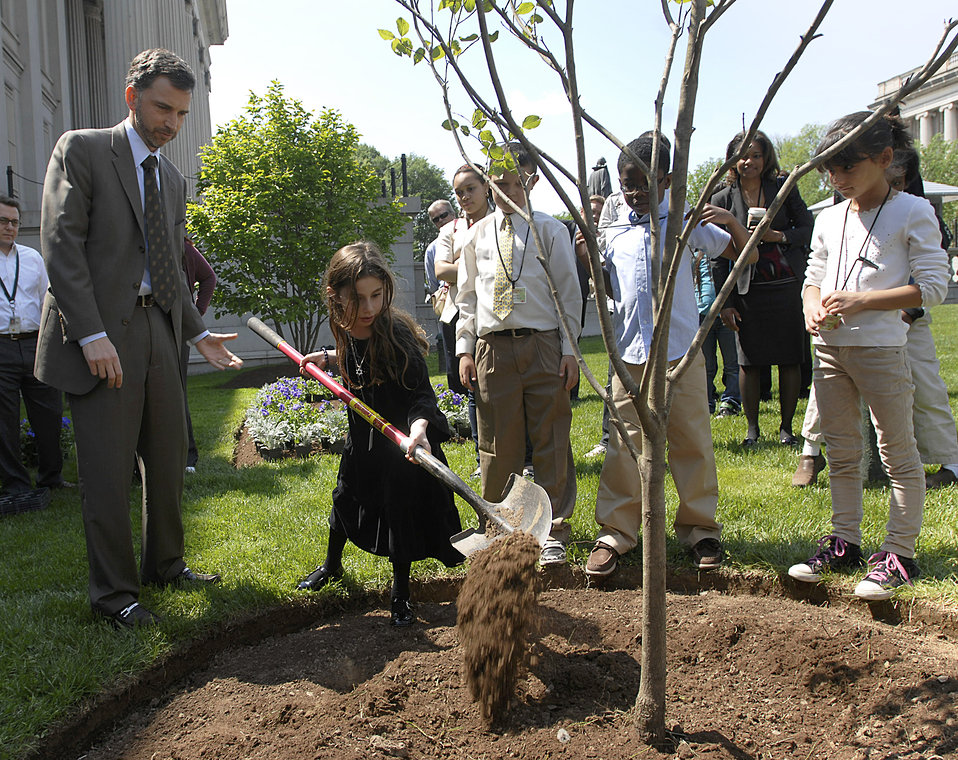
Earth Day/Take Your Children to Work Day, 4/22/10

Assistant Secretary for Management Dan Tangherlini planting a tree with children of Treasury employees participating in Take Your Kid to Work Day in front of the Treasury Department on Earth Day, April 22, 2010.